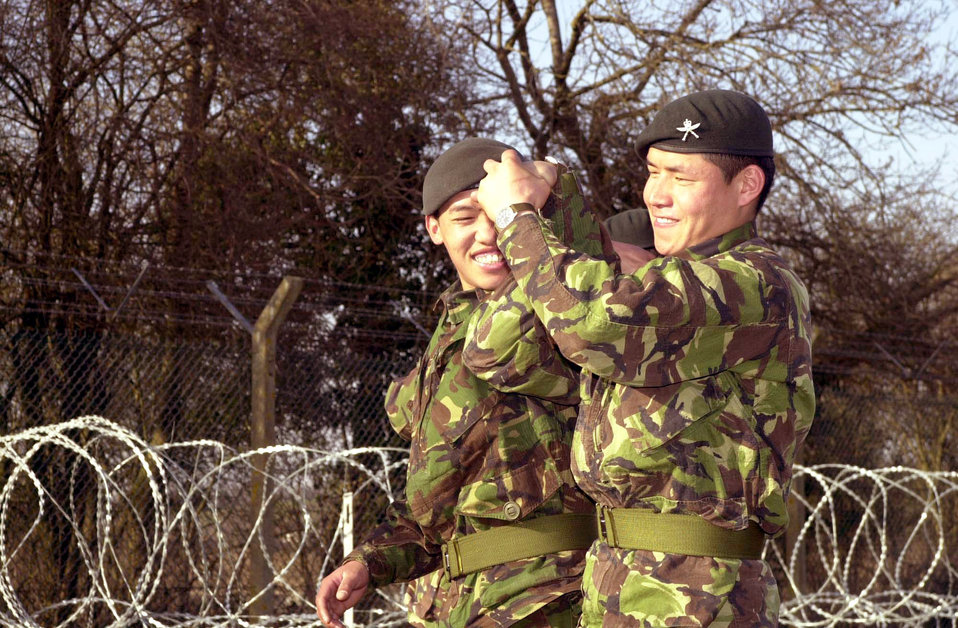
Gurkha Rifles

ROYAL AIR FORCE FAIRFORD, England -- Two riflemen from the 3rd Regiment of Gurkha Rifles, an elite unit within the British Army, practice martial arts tactics here March 20. The legendary Nepali fighters of the 3rd RGR are here to safeguard the base, joining forces with Air Force security forces, Royal Air Force and Ministry of Defence police and local constabularies.